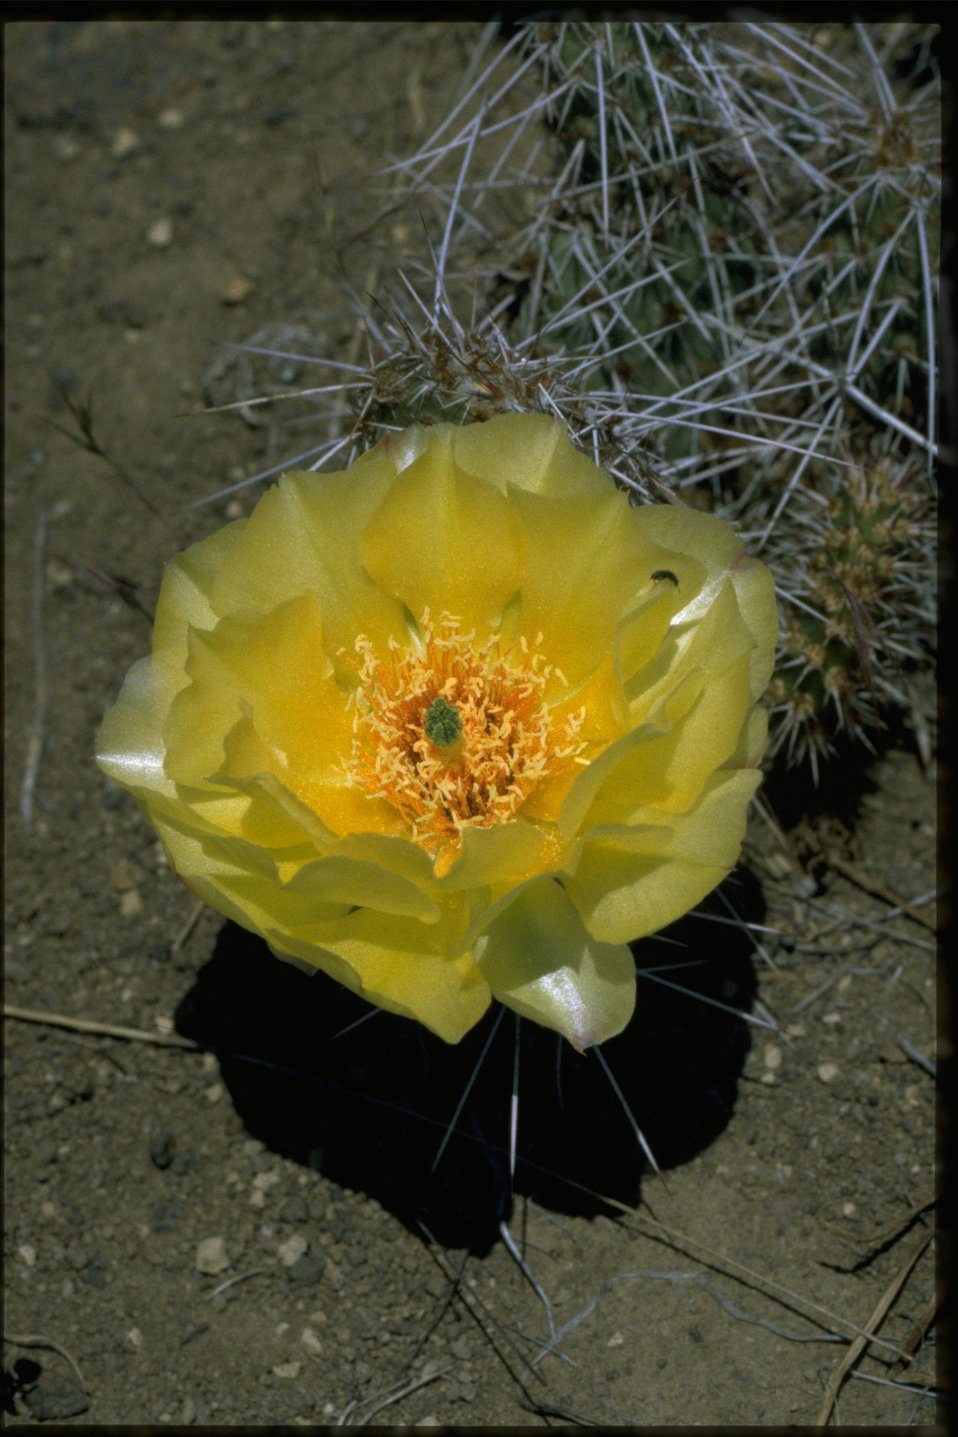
Closeup shot of Opuntia.